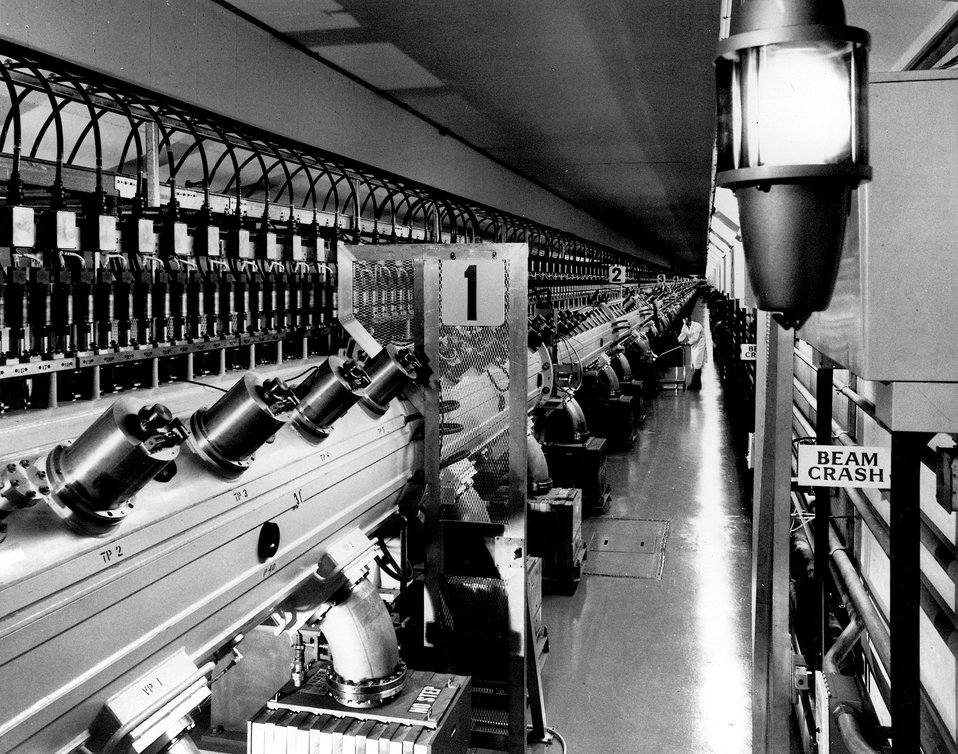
The 200 MeV linear accelerator at the U.S. Atomic Energy Commission's Brookhaven National Laboratory injects protons into the Alternating Gradient Synchrotron which accelerates them to 33 BeV. c. 1972